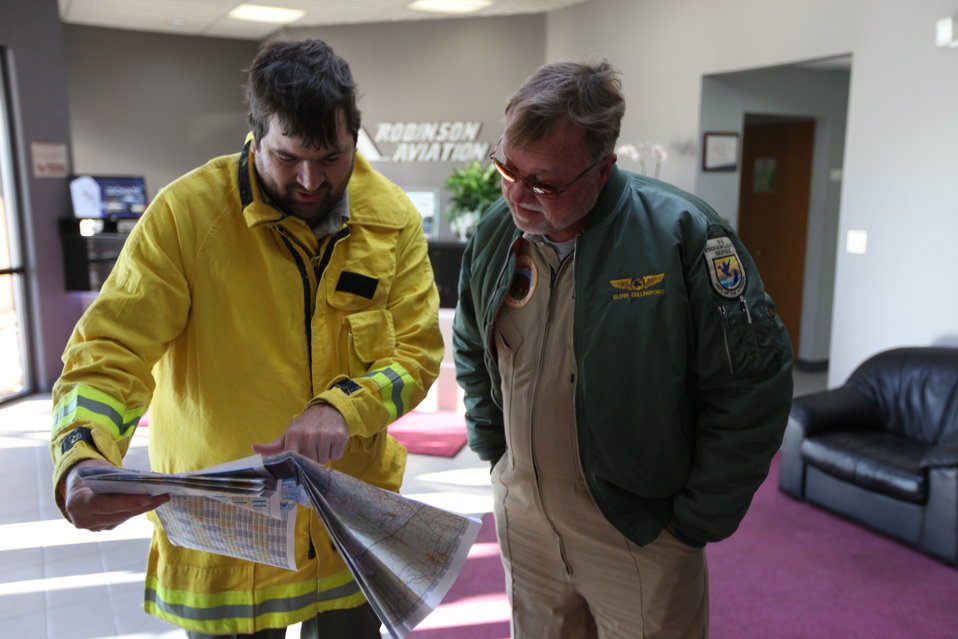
Refuge Manager Rick Potvin with pilot Glenn Cullingford (CT)

Refuge Manager Rick Potvin discussing the aerial survey of the refuge in the aftermath of storm Sandy with USFWS pilot Glenn Cullingford.